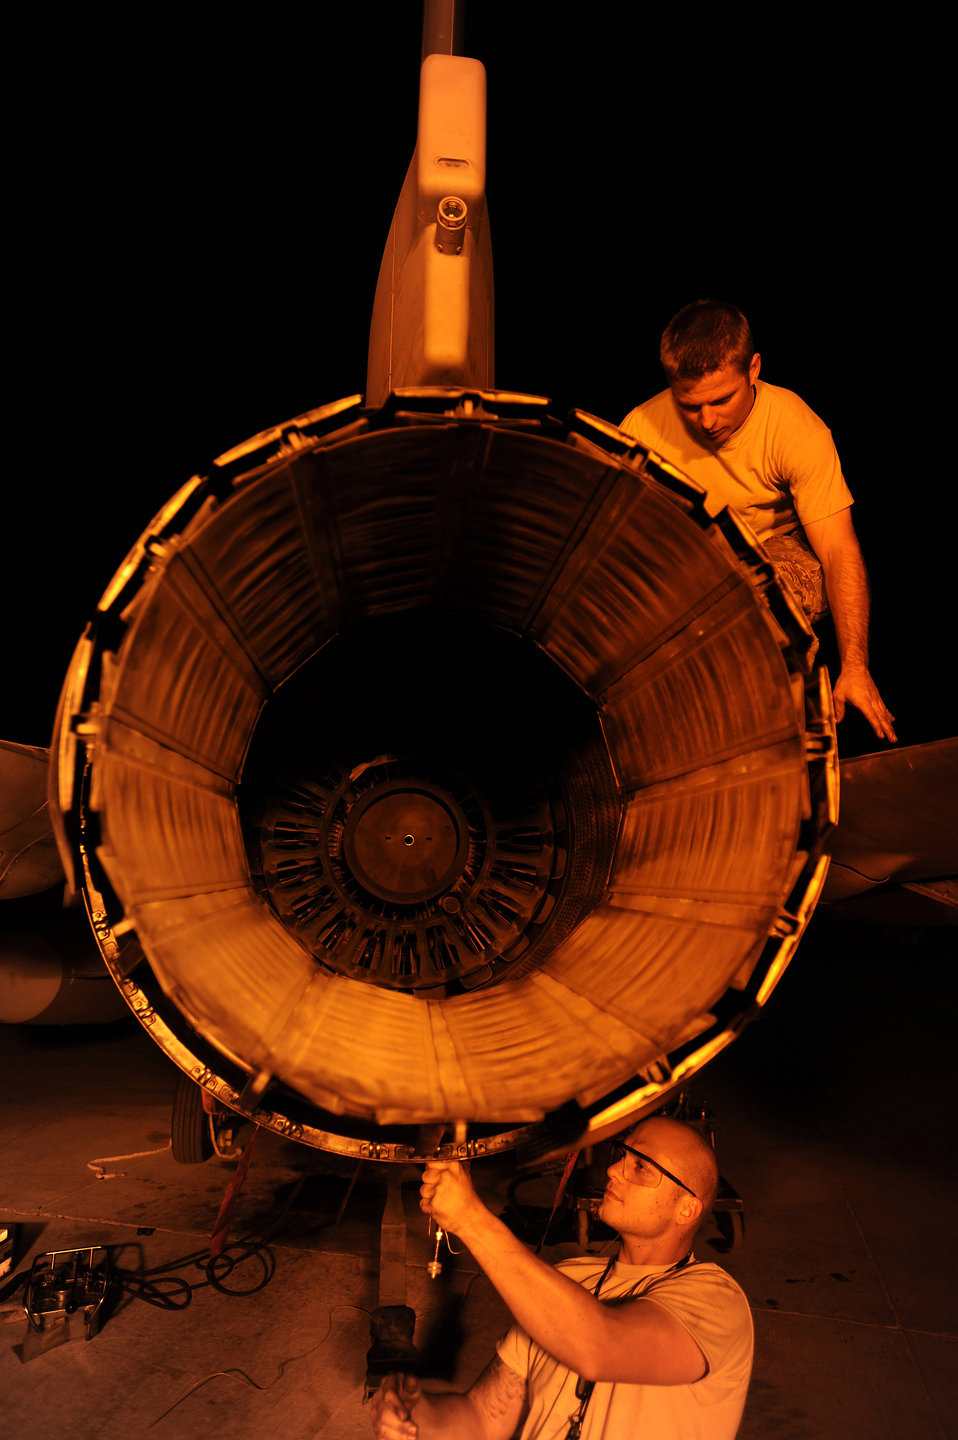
Burning midnight oil

Staff Sgt. Danny Shaw (top) actuates an exhaust nozzle while Staff Sgt. Nathan Gadbois installs safety wiring around bolts on an F-16 Fighting Falcon Oct. 6 during some late-night maintenance at Joint Base Balad, Iraq. Installing safety wire prevents parts from vibrating off the aircraft. Both Airmen are aerospace propulsion journeymen with the 332nd Expeditionary Aircraft Maintenance Squadron and are deployed from Misawa Air Base, Japan. Sergeant Shaw's hometown is Glasgow, Ky., and Sergeant Gadbois's hometown is Bryan, Texas.